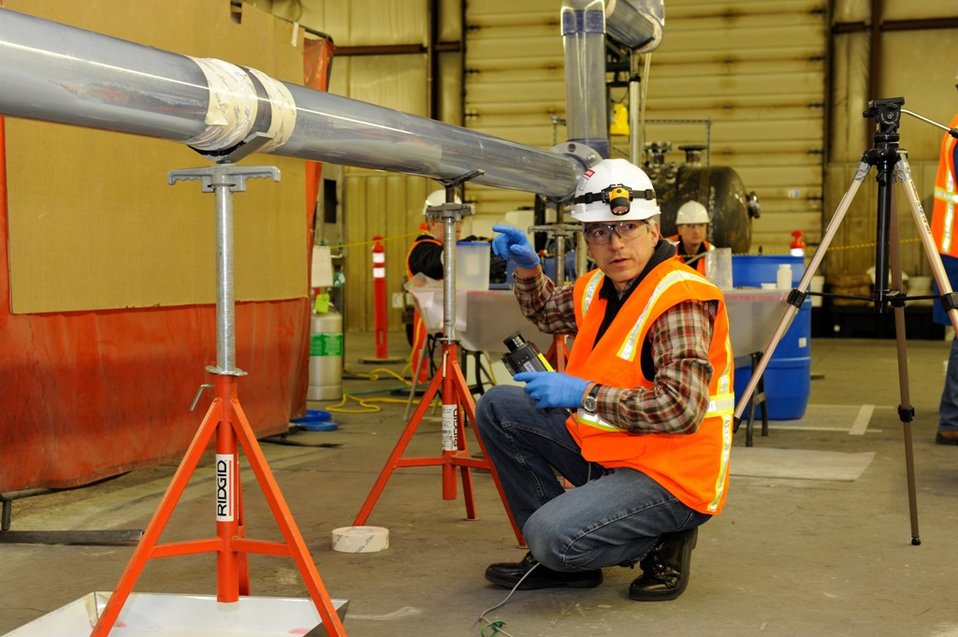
Idaho Small Business at Work

Idaho Falls-based Communication Designs developed an infrared camera system to help CH2M-WG Idaho engineers cultivate a method to treat potentially dangerous sodium inside the Experimental Breeder Reactor II’s cooling system. The sodium treatment will allow for the safe demolition of the reactor by March 2012.